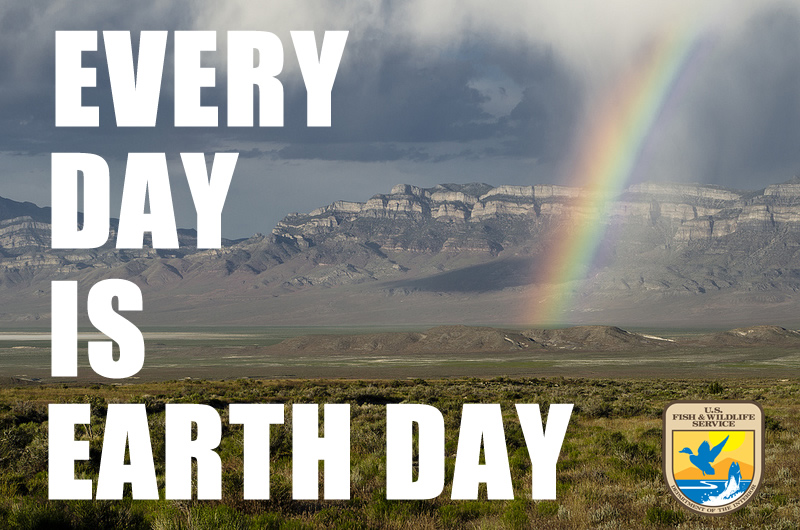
Every Day is Earth Day